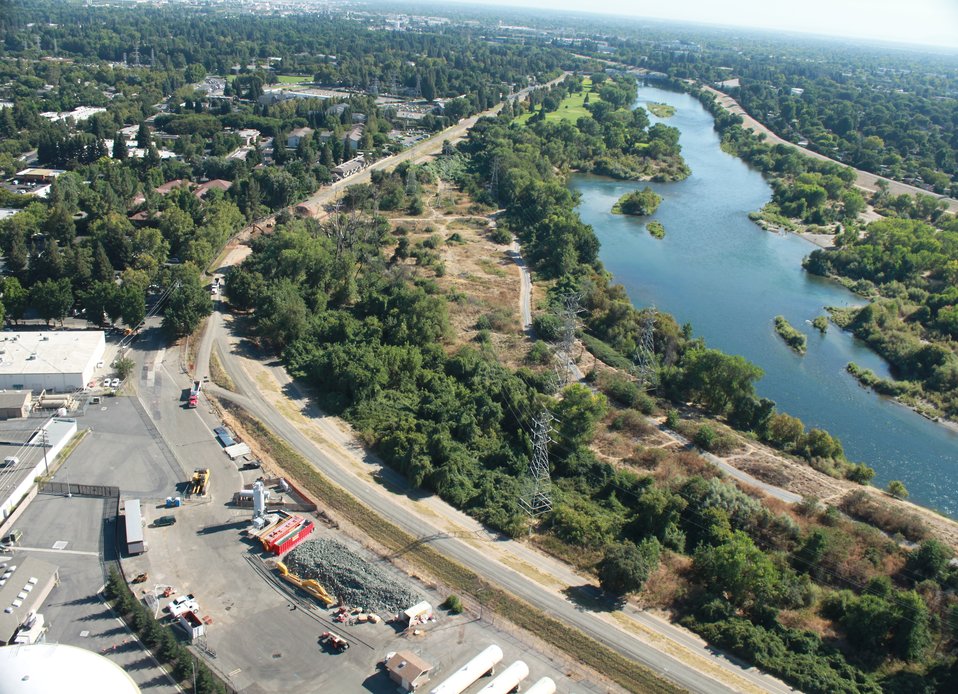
American River levee improvement construction

Construction continues on an American River levee improvement project in Sacramento, Calif., Sept. 8, 2011. Under the American River Common Features project, funded in part by the American Recovery and Reinvestment Act of 2009, the U.S. Army Corps of Engineers Sacramento District is installing a slurry wall in the levee to help strengthen it and make it harder for water to leak through.